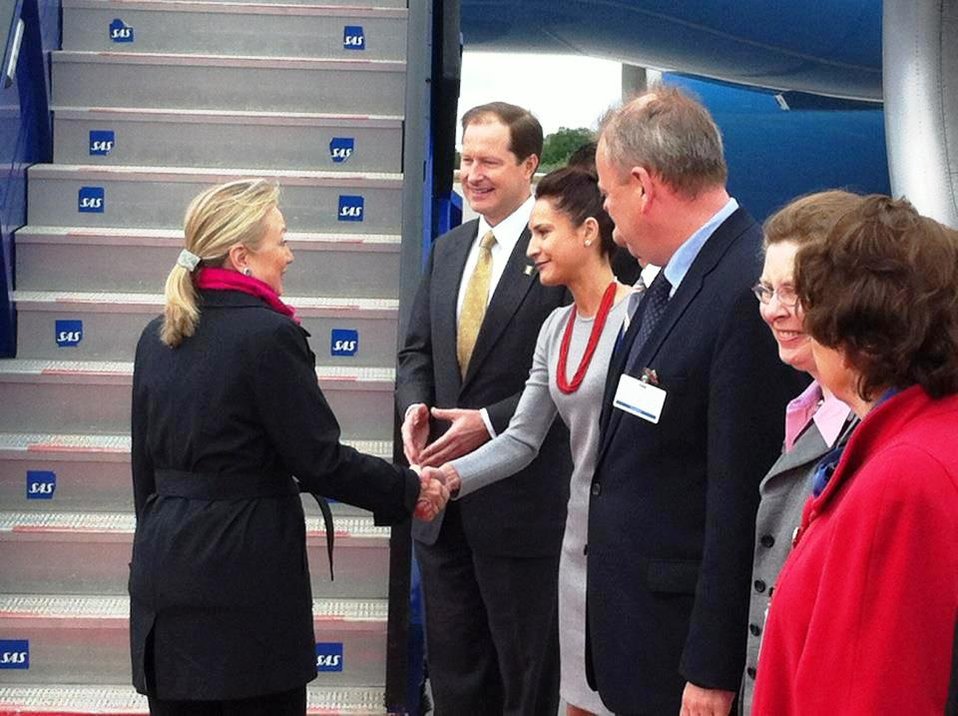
Ambassador Brzezinski and His Wife Bid Farewell to Secretary Clinton

U.S. Ambassador to Sweden Mark Brzezinski and his wife, Natalia Brzezinski, bid farewell to U.S. Secretary of State Hillary Rodham Clinton in Stockholm, Sweden, on June 3, 2012.